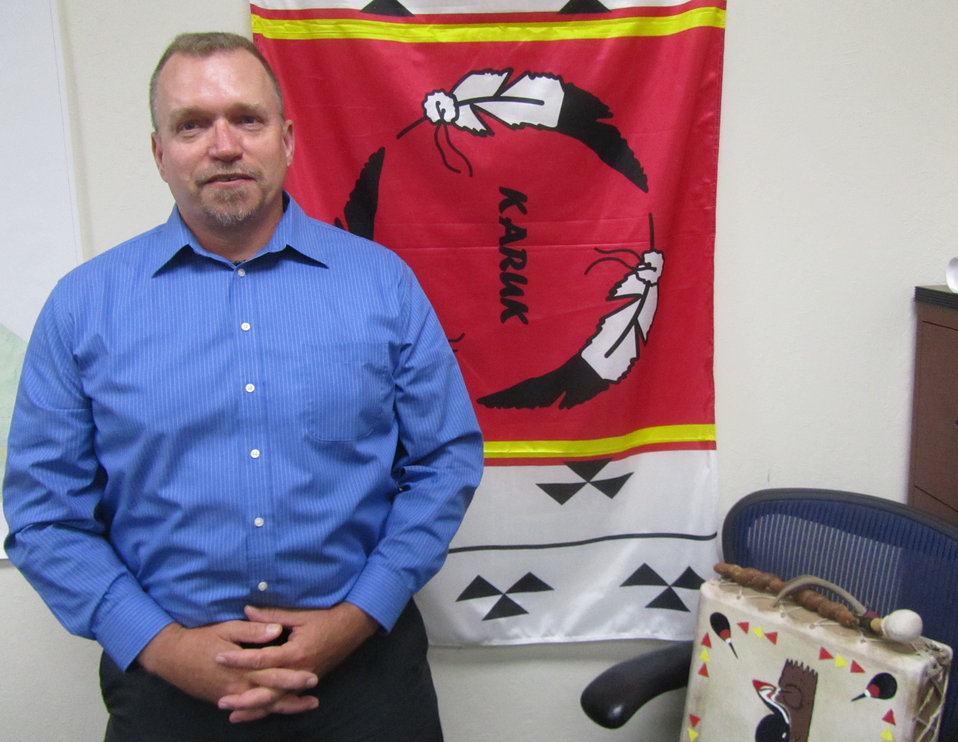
Bob Goodwin

Former California Highway Patrol officer Bob Goodwin is a Tribal relations advisor for the U.S. Forest Service.